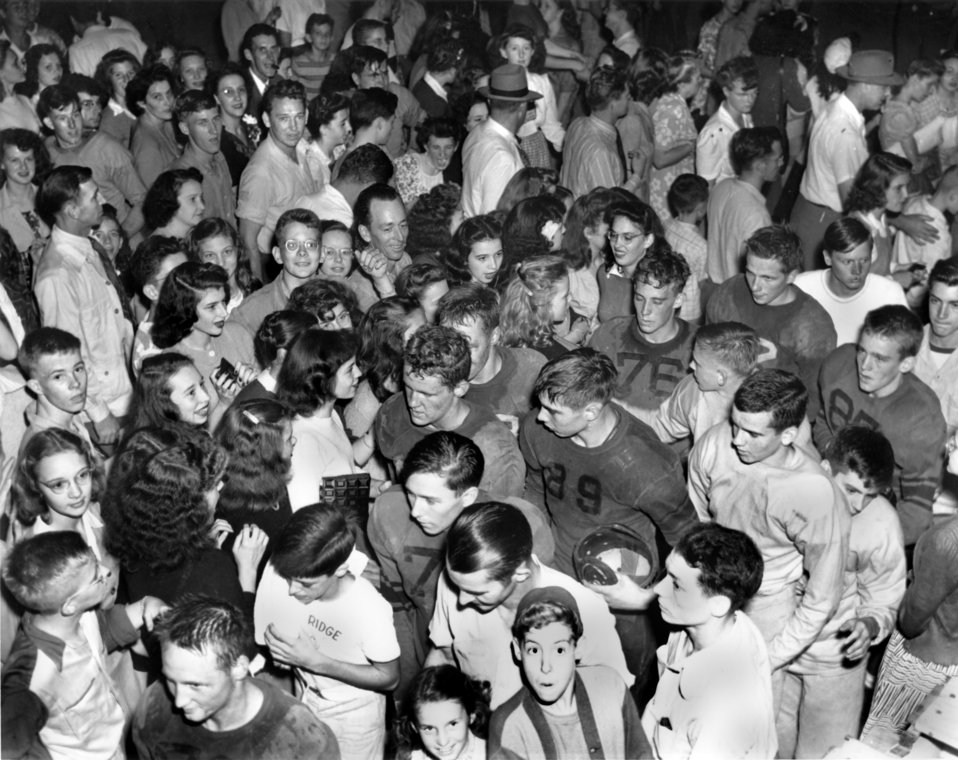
Oak Ridge vs Spring City Football Oak Ridge 1945

1135-9 DOE photo Ed Westcott 9-21-1945 Oak Ridge Tennessee